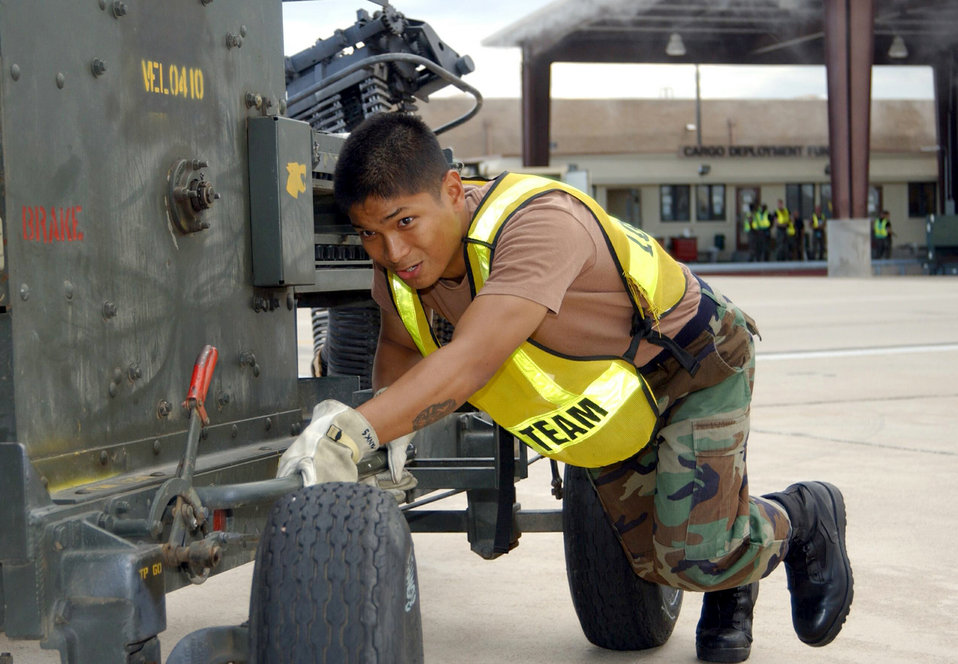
Bushwacker 07-04

DAVIS-MONTHAN AIR FORCE BASE, Ariz. (AFPN) -- Airman 1st Class Daniel Nededog from the 355th Communications Squadron here moves an A-10 Thunderbolt II ammunition loader. Airman Nededog is participating in a local operational readiness exercise called Bushwhacker 04-07.